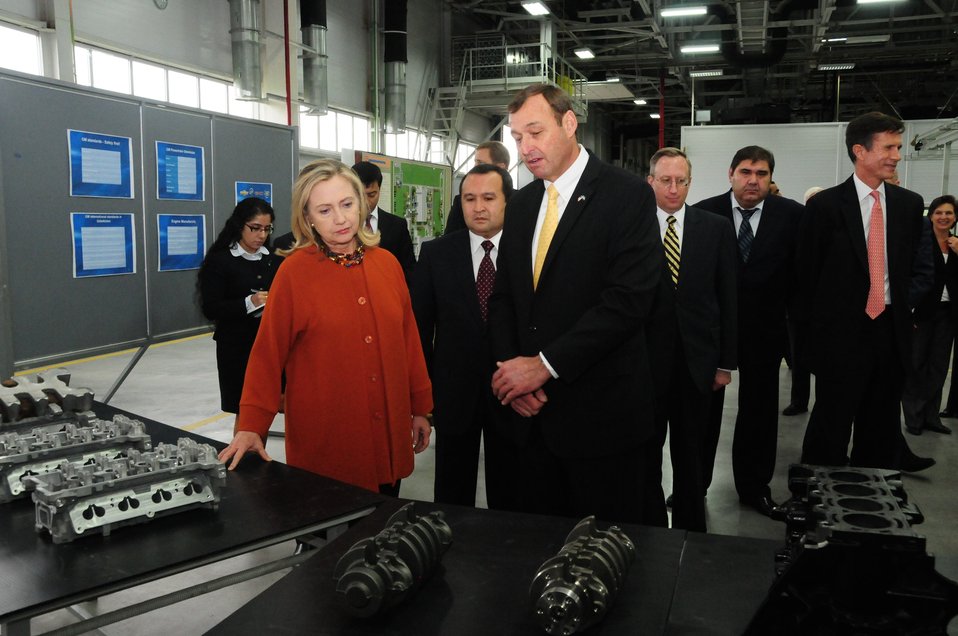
GM Uzbekistan General Director Spendel Discusses Powertrain Components With Secretary Clinton and Uzbek Deputy Prime Minister Rozukulov

General Motors (GM) Uzbekistan General Director Juergen Spendel discusses powertrain components with U.S. Secretary of State Hillary Rodham Clinton and Uzbek Deputy Prime Minister Ulugbek Rozukulov at the GM factory in Tashkent, Uzbekistan, on October 23, 2011.